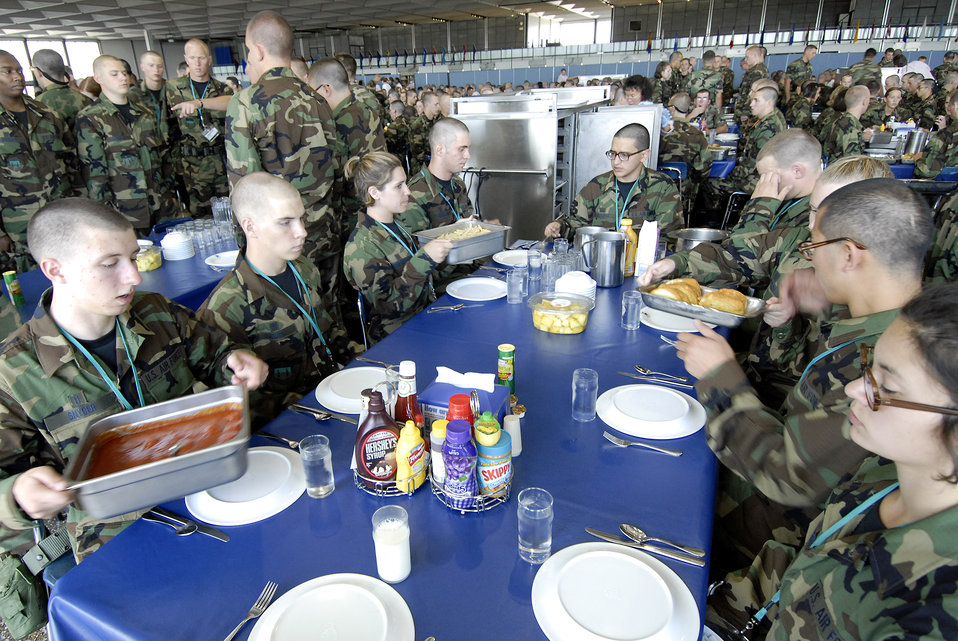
Eyes on the eagle

Basic cadet trainees prepare for their first lunch since arriving as the Class of 2011, as infractions are dealt with, and corrected, at surrounding tables June 29 at the U.S. Air Force Academy in Colorado. The cadets are in their first week of training and must not take their eyes off the eagle on their plate as they eat. They are in the first half of basic cadet training, commonly known as